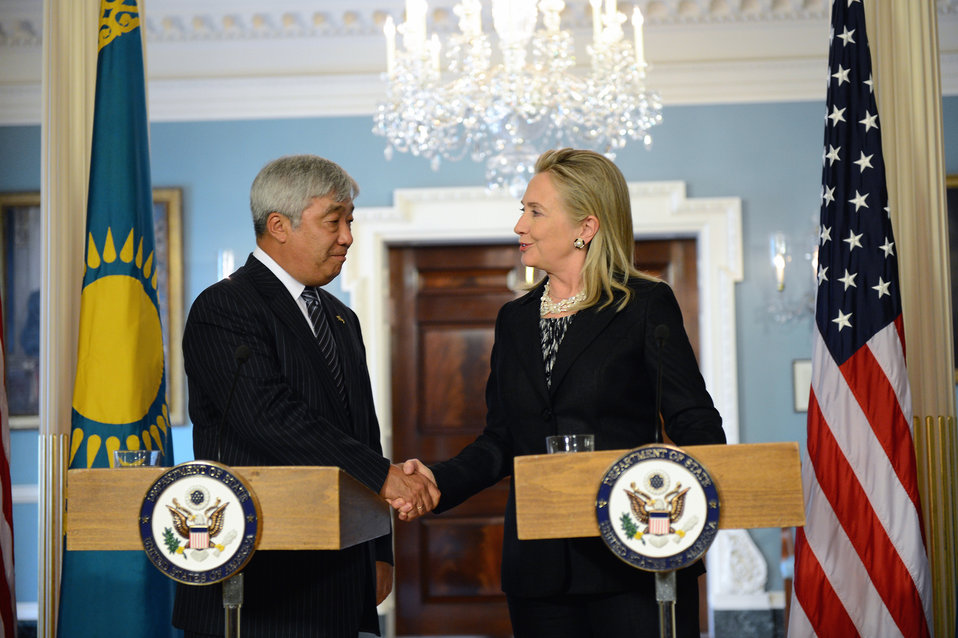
Secretary Clinton Shakes Hands With Kazakh Foreign Minister Idrissov

U.S. Secretary of State Hillary Rodham Clinton shakes hands with Kazakh Foreign Minister Yerlan Idrissov after their joint press conference at the U.S. Department of State in Washington, D.C., October 3, 2012.